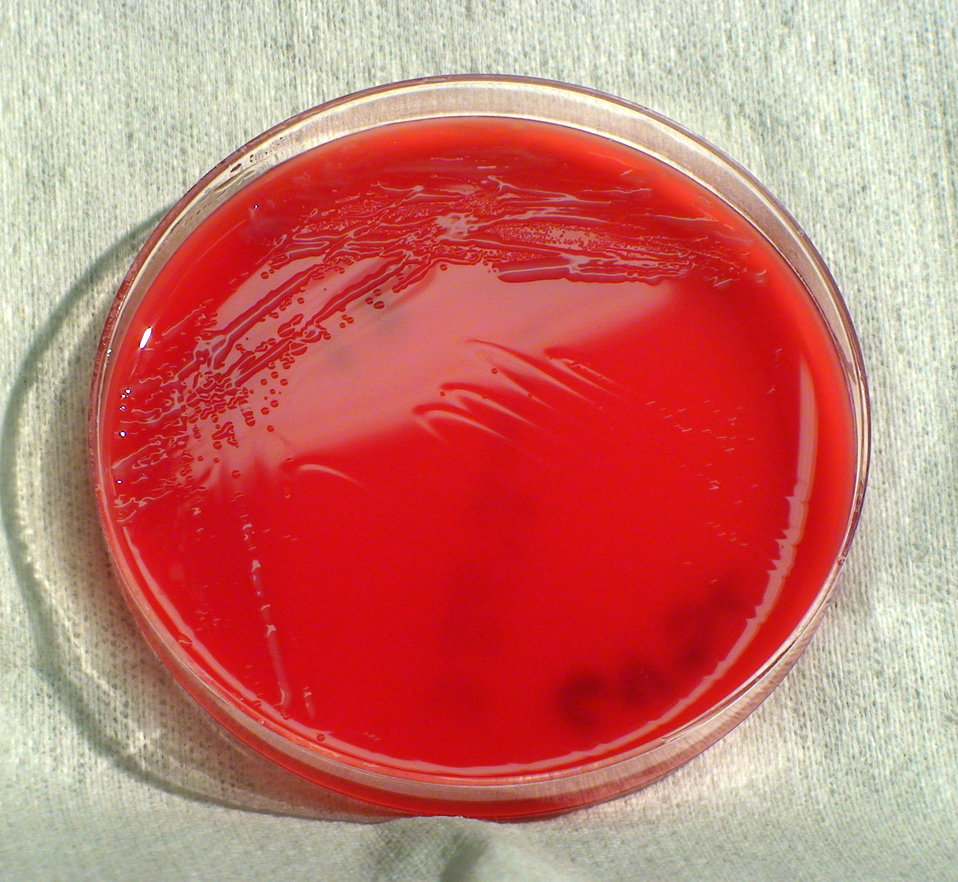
This photograph depicts light colonial growth displayed by Gram-negative Psychrobacter phenylpyruvicus bacteria, which was grown on a medium of sheep's blood agar (SBA), for a 24 hour time period, at a temperature of 37�C. See PHIL 12386, for another closer view of this culture plate, and these bacterial colonies.